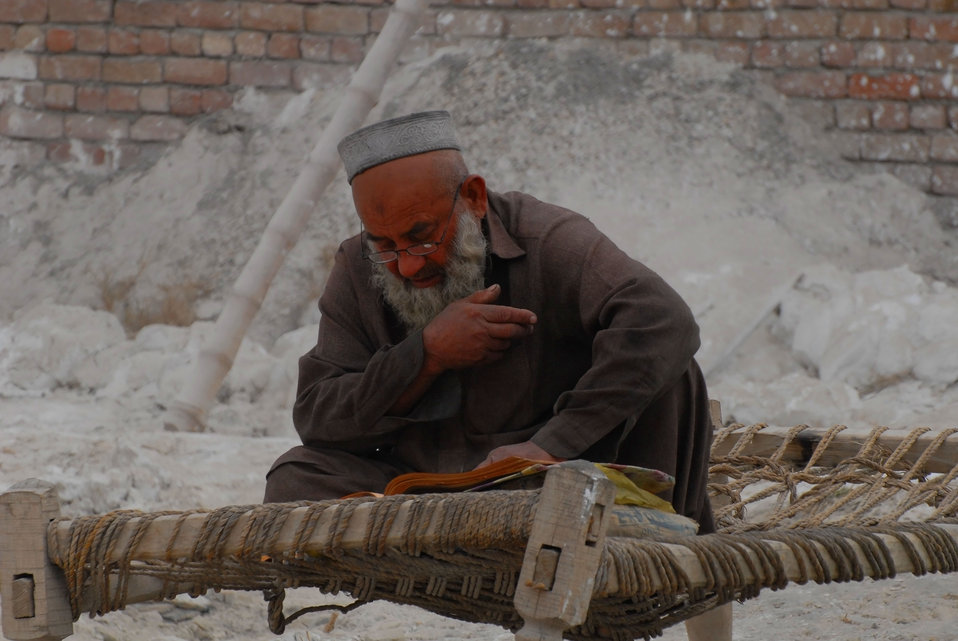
'On the Road' in Nangarhar Province